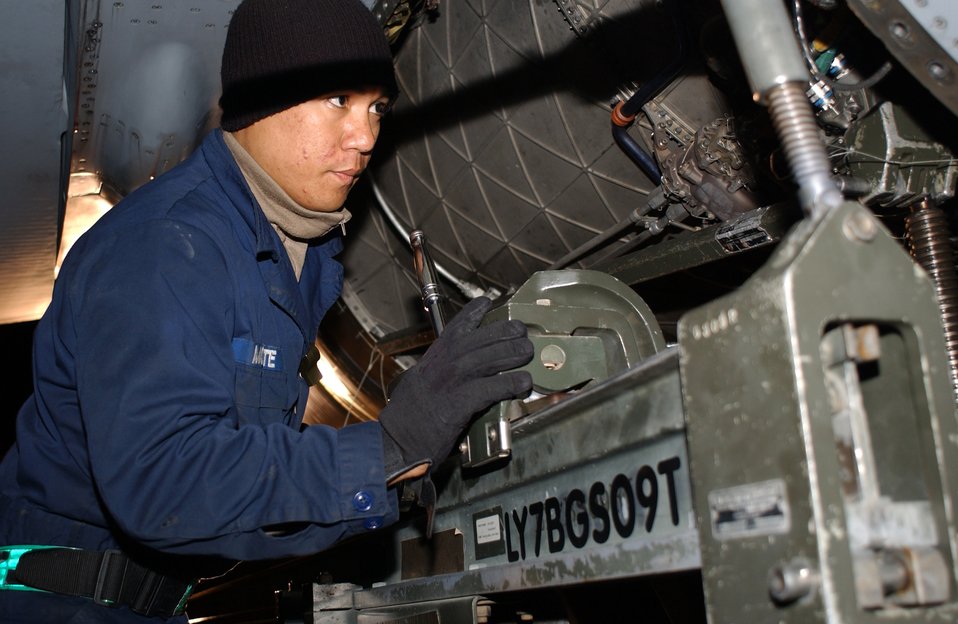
Engine work

LUKE AIR FORCE BASE, Ariz. -- Senior Airman Nathan Savell installs an engine into an F-16 Fighting Falcon engine bay here Dec. 2. Airman Savell is a crew chief with the 308th Aircraft Maintenance Unit.